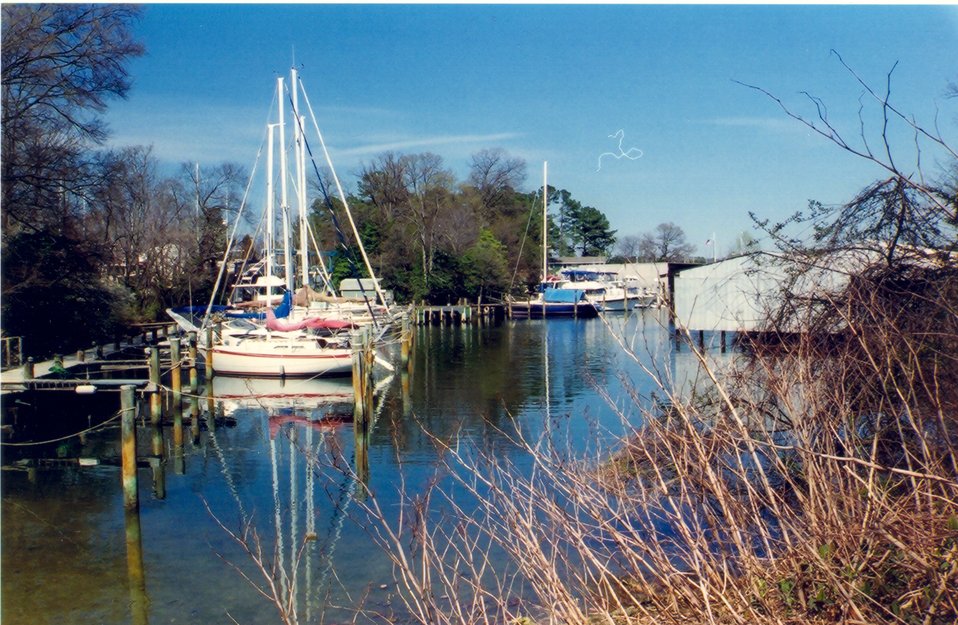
The harbor at Solomons Island.